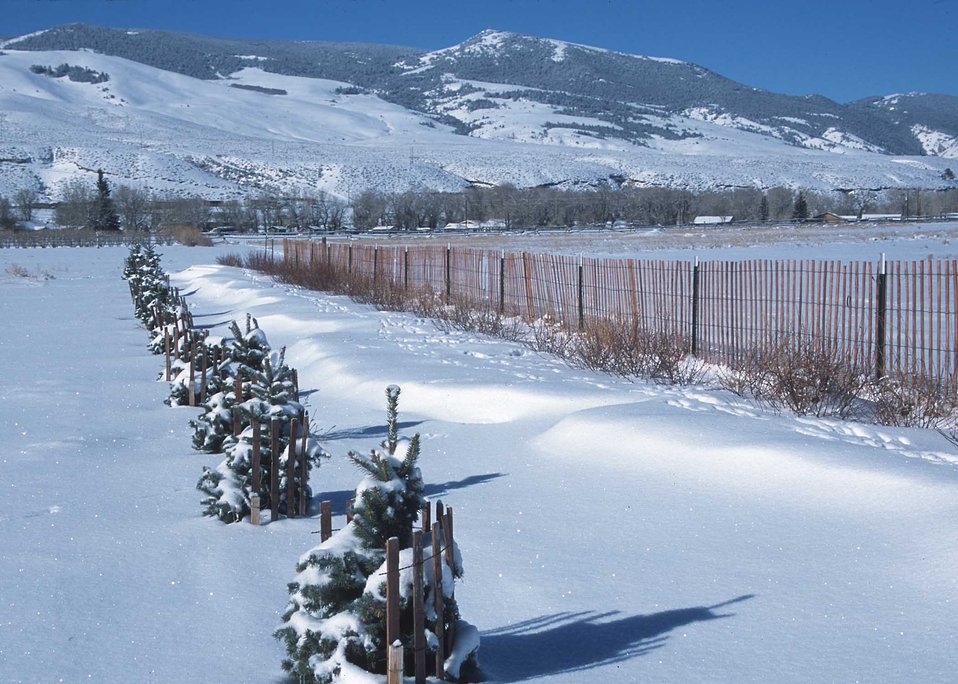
Three year old windbreak and snow fence catching snow. Blue spruce and cottoneaster in 2 rows. Dubois, Wyoming.